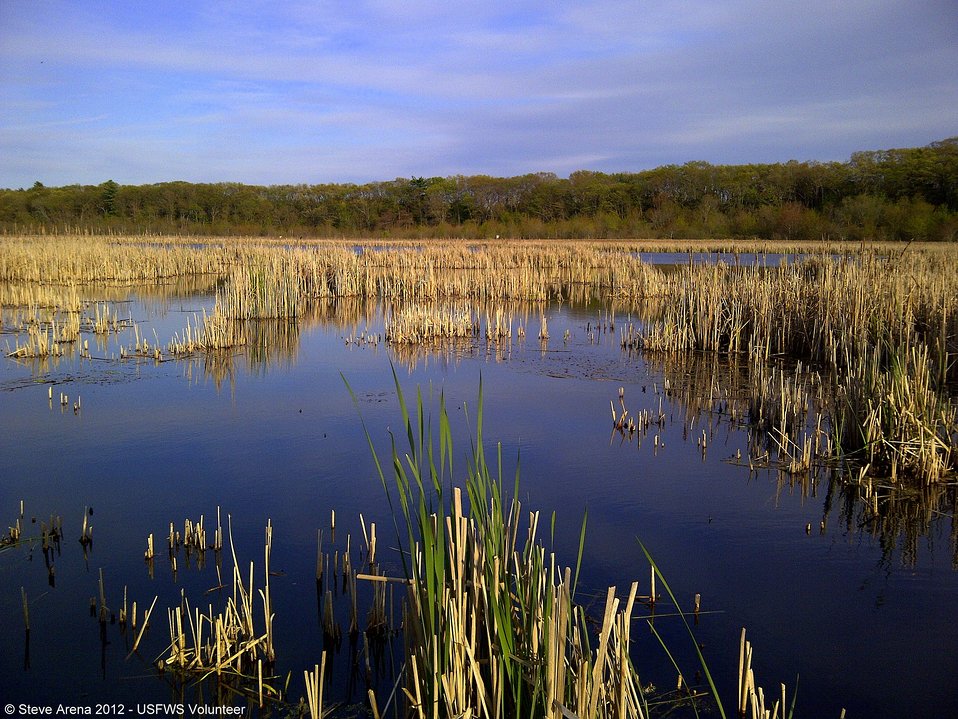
Upper Pool looking north east during Marshbird Survey Scouting 28 April 2012

Great Meadows National Wildife Refuge.